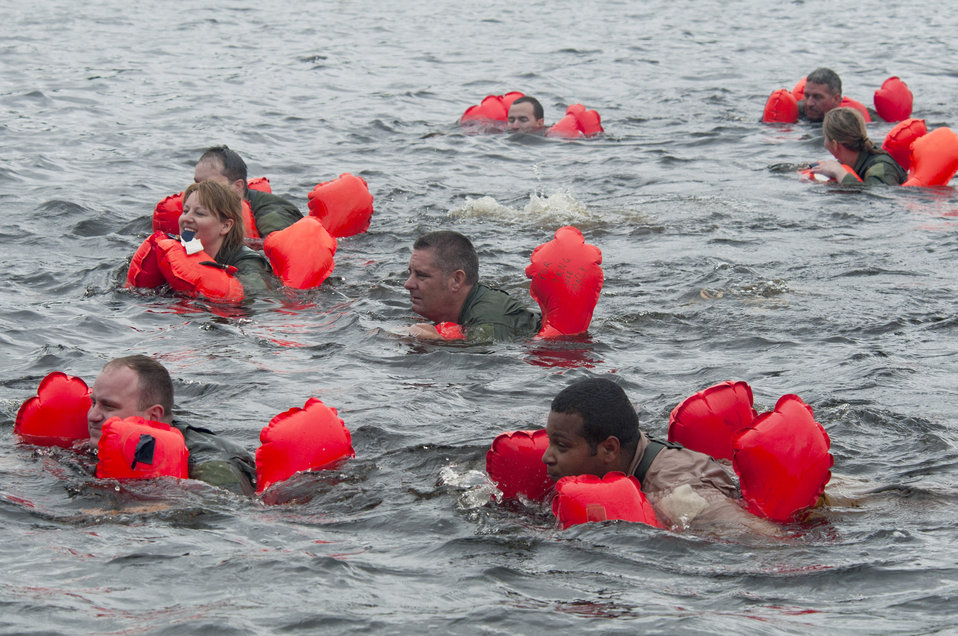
Water survival training

Airmen swim in while using life preservers June 11, 2011, during aircrew survival training in the St. Croix River near Hastings, Minn.